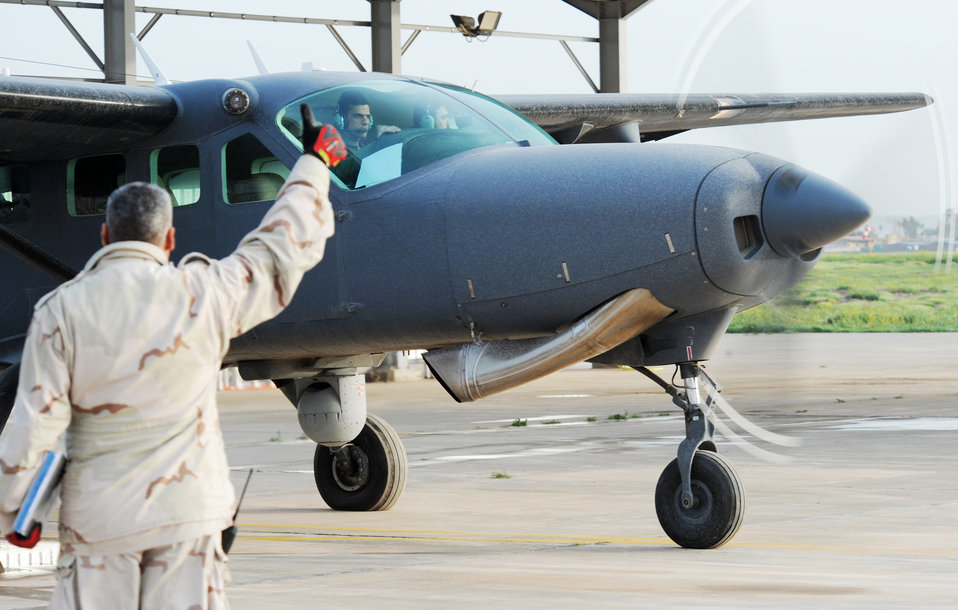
All-Iraqi effort during historic election

Iraqi air force Squadron 3 launches six of their aircraft March 5, 2010, from Kirkuk Regional Air Base, Iraq. This launch was a surge flight operation in support of the national Iraqi elections March 7.